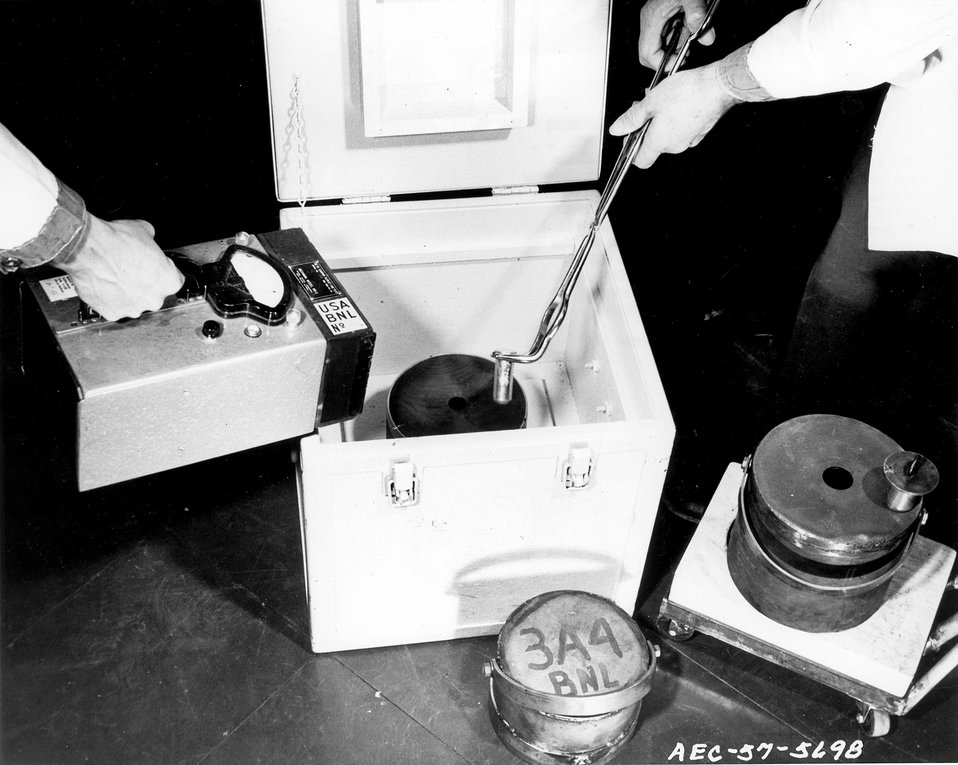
RADIOISOTOPE FROM BROOKHAVEN REACTOR READY FOR SHIPMENT...After a sample substance has been made radioactive in the Brookhaven reactor, the sample is ready for shipment. c. 1957